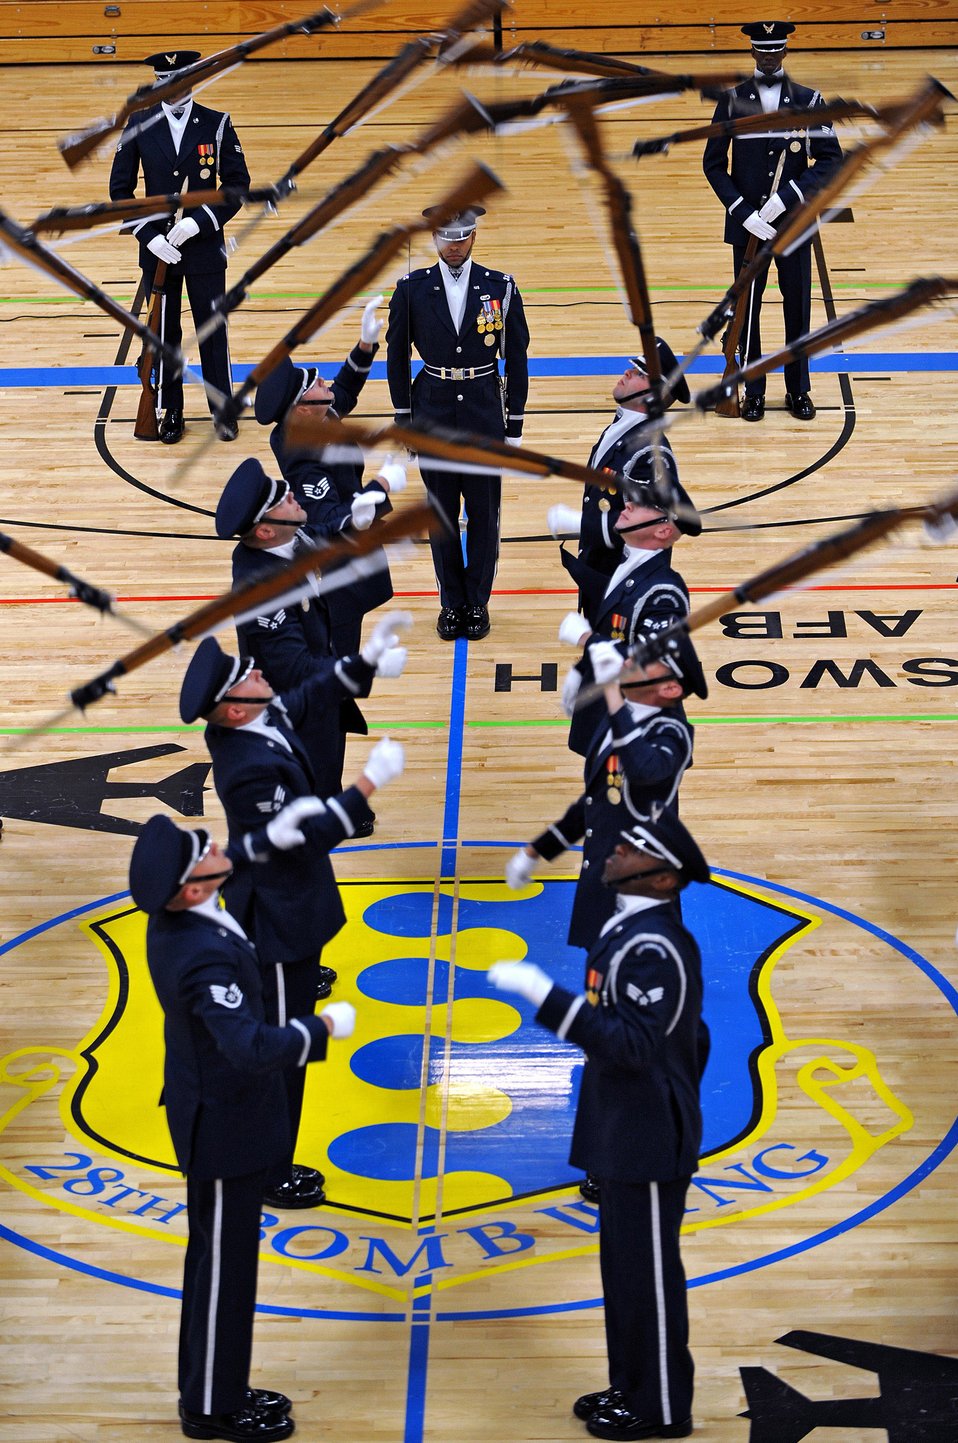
No margin of error

The Air Force Honor Guard Drill Team performs a complex routine May 12 at Ellsworth Air Force Base, S.D. The team tours worldwide to public and military venues.